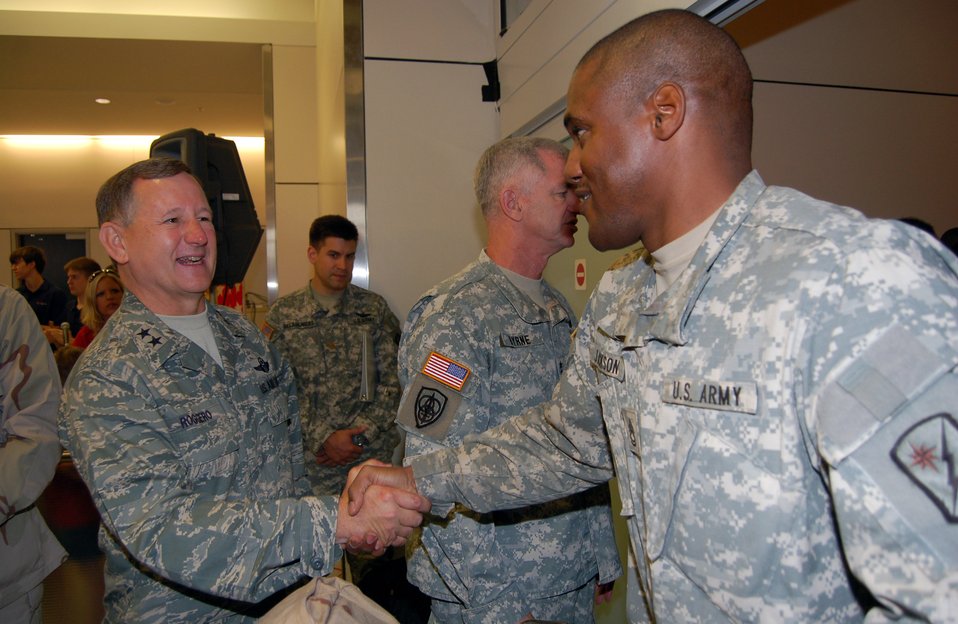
Mobility Command reaches milestone in 'R and R' flight op

Maj. Gen. Frederick Roggero shakes hands with a Soldier returning from overseas on rest and recuperation leave June 12 at Dallas-Fort Worth International Airport. The general is the director of Air, Space and Information Operations at Headquarters Air Mobility Command.